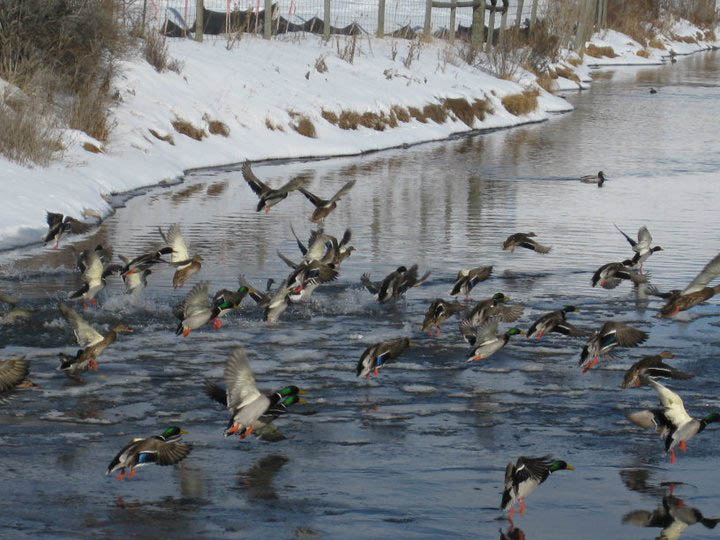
A Group Lift Off

A variety of waterfowl can commonly be seen on the ponds and creek near the visitor center.

Credit: USFWS / Mark Abetz, National Elk Refuge winter naturalist